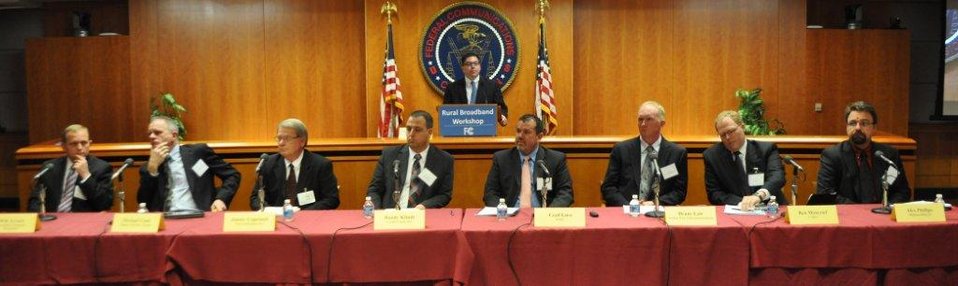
3.19.14 Rural Broadband Workshop

Commissioner O'Rielly speaking at the Rural Broadband Workshop.